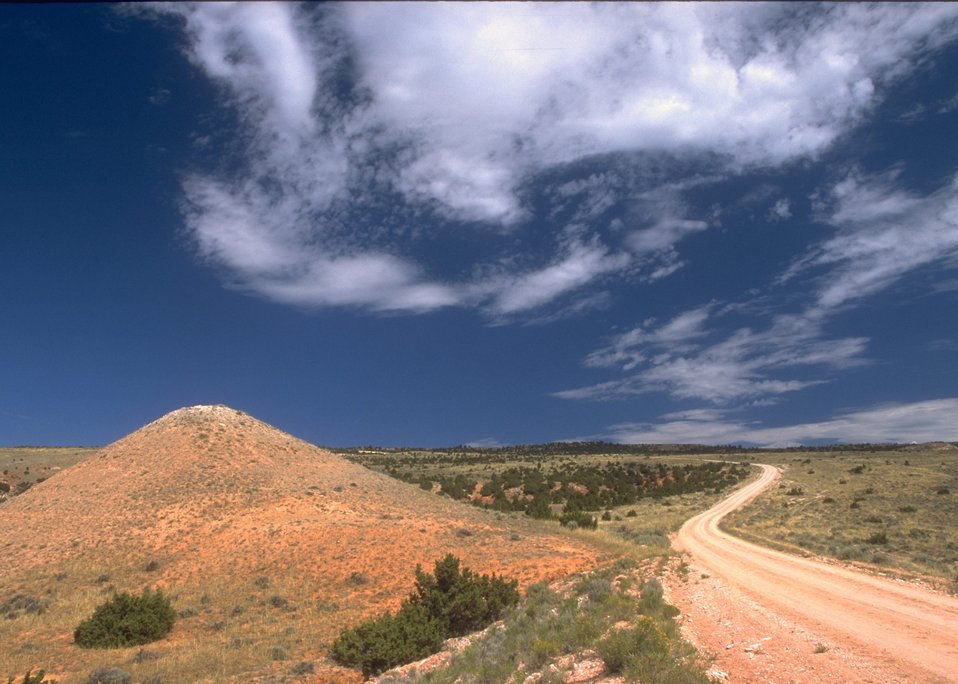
View along the Red Gulch/Alkali Back Country Byway, Worland Field Office.